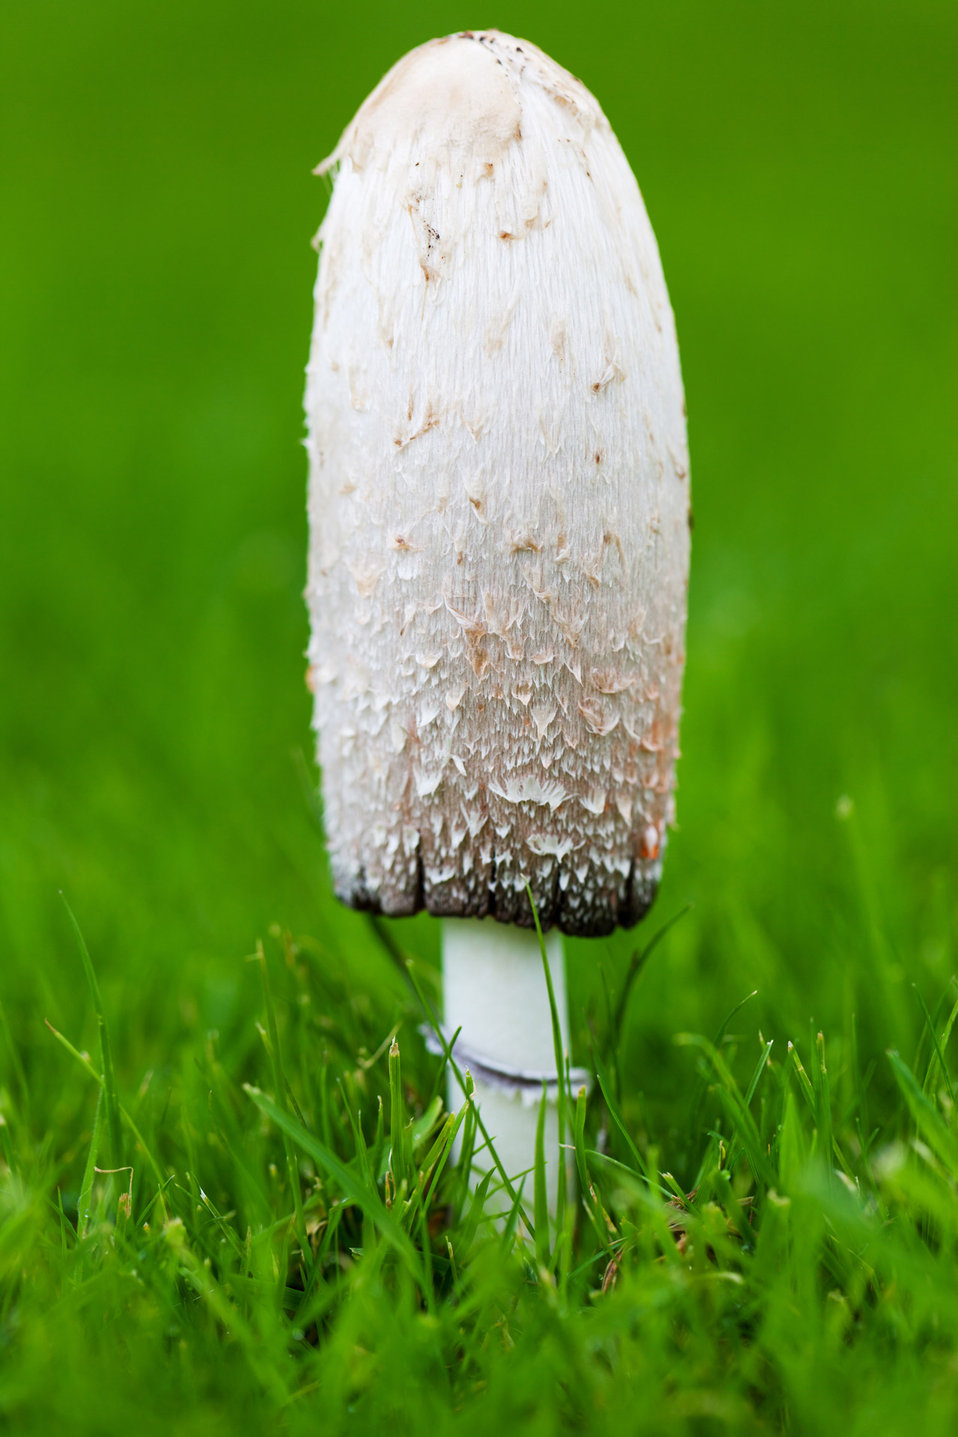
Mushroom on grass

Wild mushroom growing on green grass.